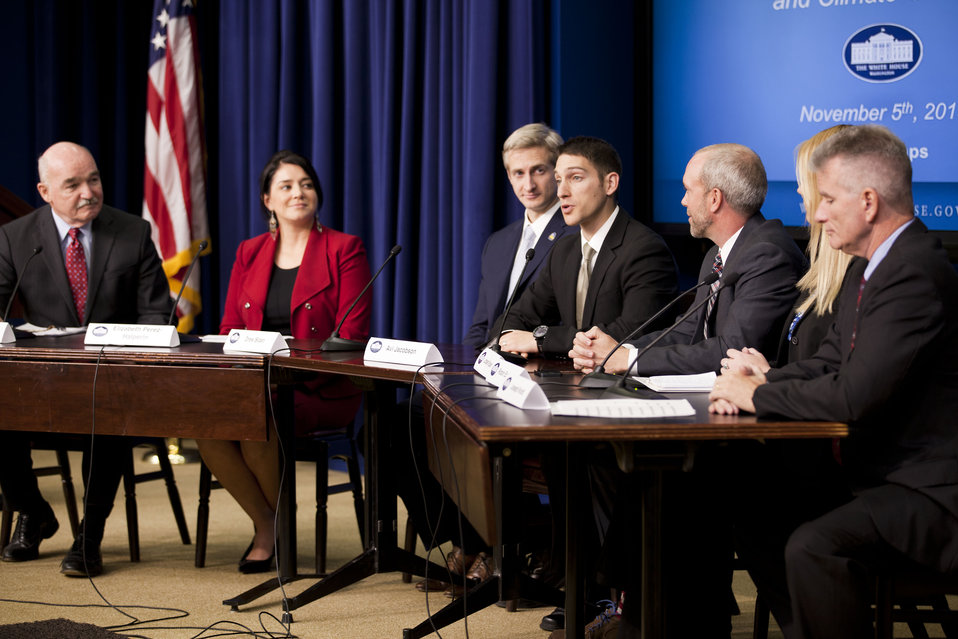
Avi Jacobson, Senior Sustainable Energy Coordinator at the Washington State Housing Finance Commission, speaks at a panel at the Champion of Change event.